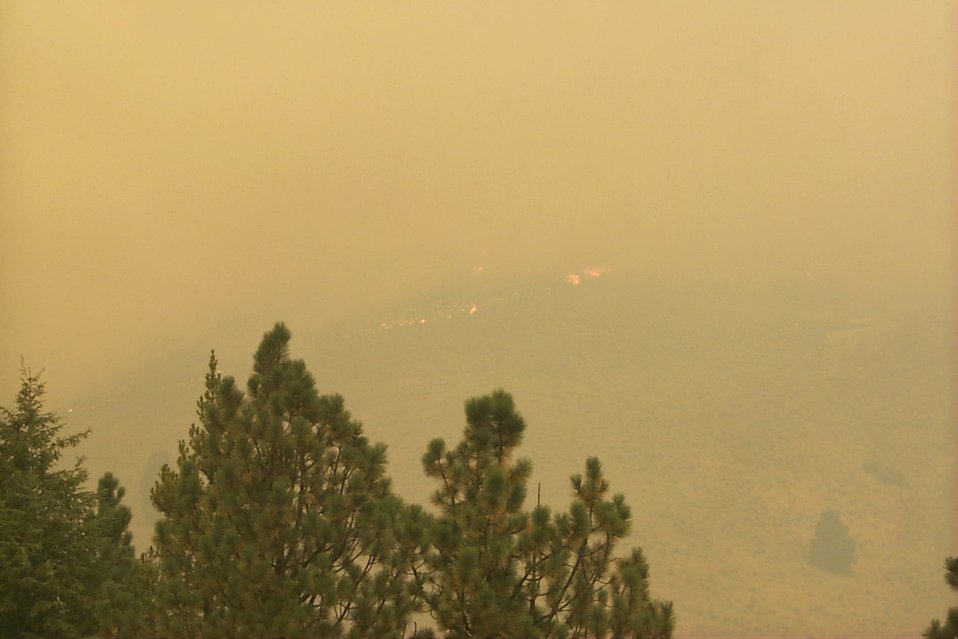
Fire Clearwater Fire Salmon Field Office USRD Upper Snake River District